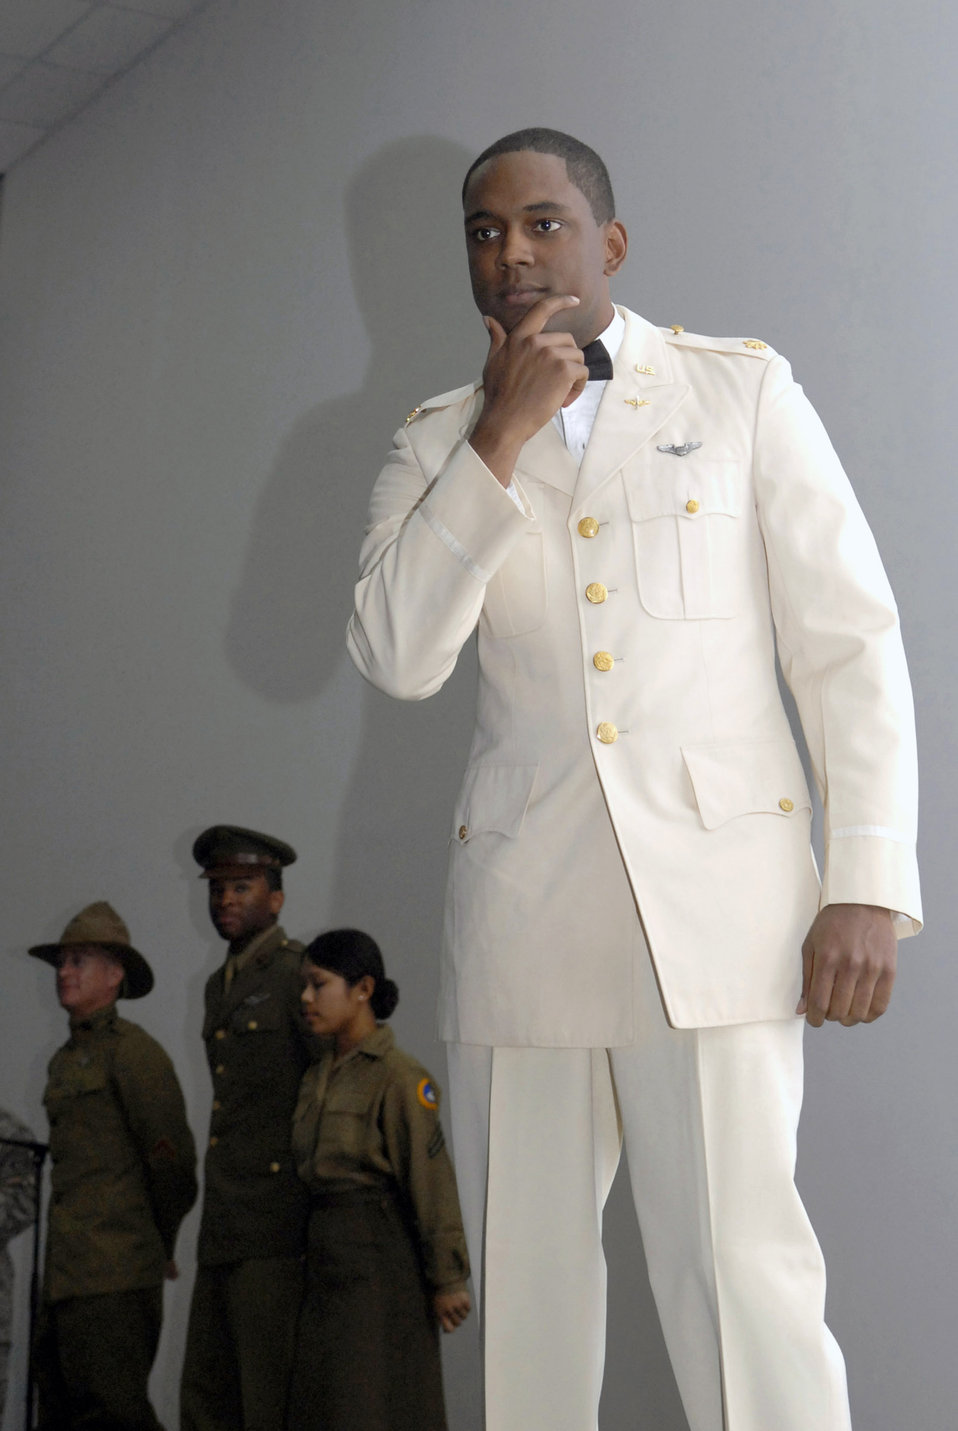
Operation Uniform Delta highlights heritage

Capt. Jonathan Harmon models the white summer transition service dress uniform, used up into the 1970s, during Operation Uniform Delta April 27 at an undisclosed location in Southwest Asia. Operation Uniform Delta was a morale event that allowed military members to view the transition of the Air Force's uniforms throughout the years. Captain Harmon is assigned to the 379th Expeditionary Communications Squadron.